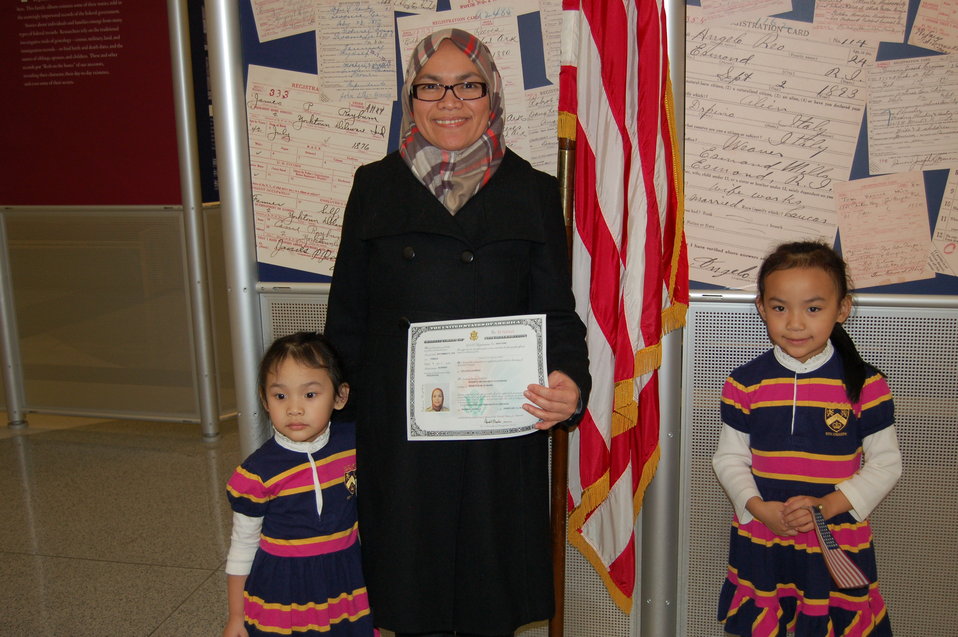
New Citizens